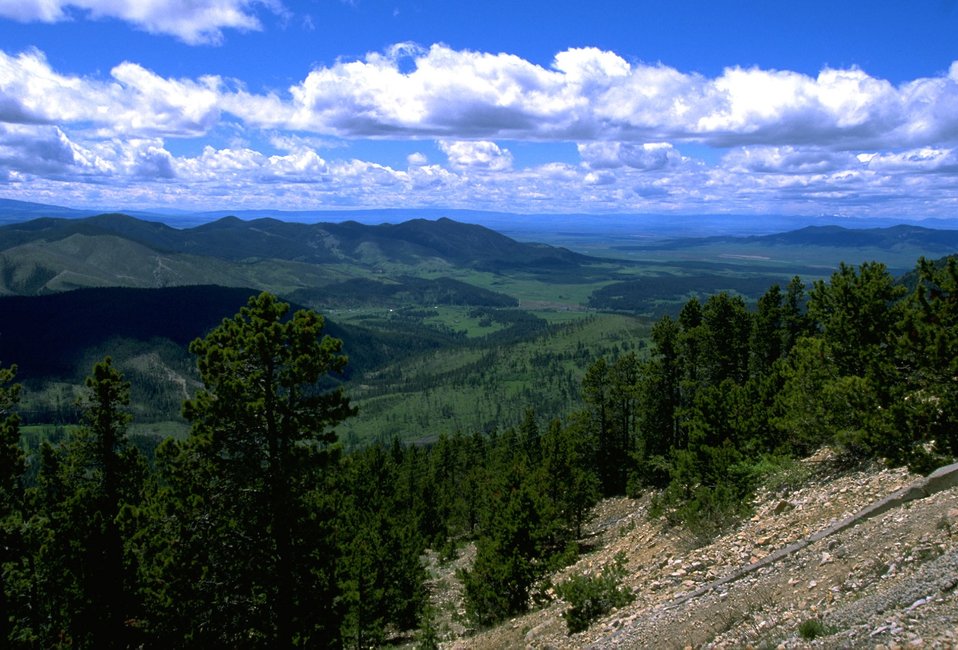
Clouds hanging over a valley in the Judith Mountains